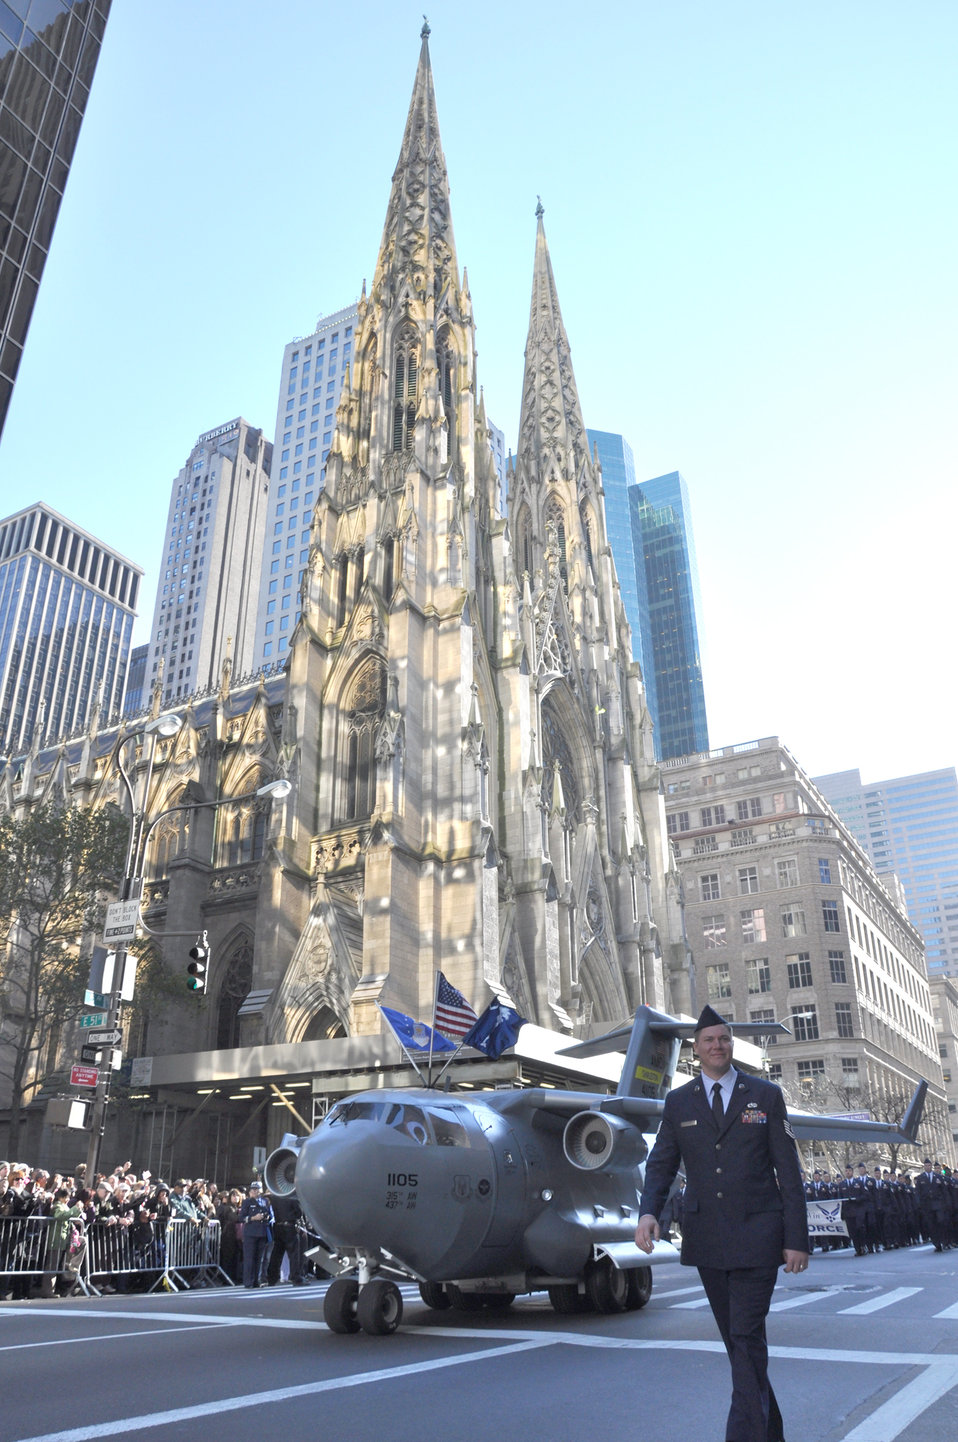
Take me for a ride

A mini C-17 Globemaster III replica passes St. Patrick's Cathedral in New York City during the Veterans Day Parade Nov. 12, 2010. The C-17 replica is a community relations tool built and maintained by reservists from the 315th Airlift Wing at Charleston Air Force Base, S.C.